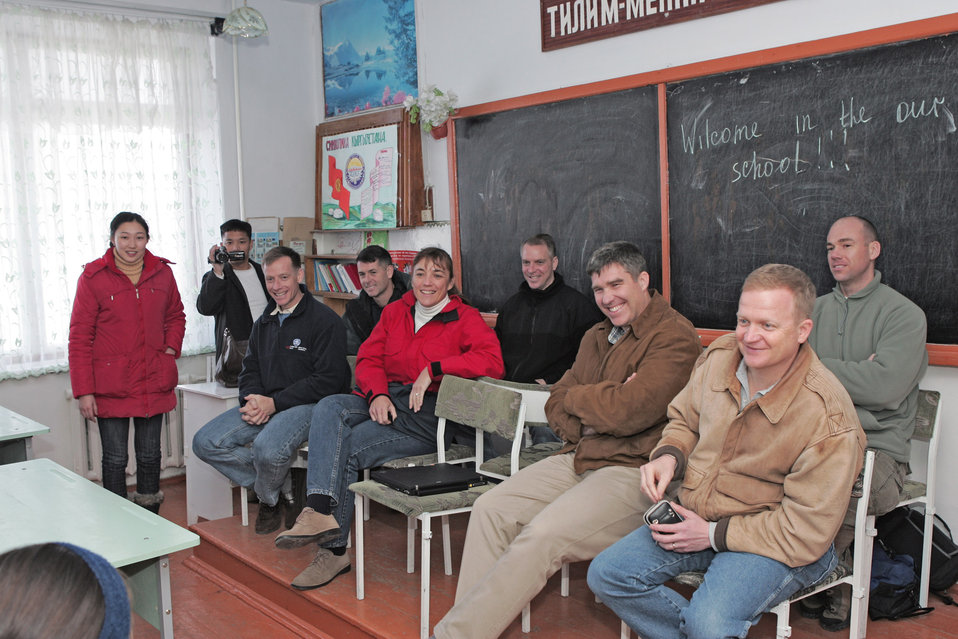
Shuttle Endeavour crew visits Kyrgyzstan village school

Astronauts from the Space Shuttle Endeavour STS-126 mission visit a Kyrgyzstan village school Jan. 29 near Manas Air Base, Kyrgyzstan. The six crewmembers of the space shuttle spoke of the journey, which launched from Kennedy Space Center in Florida Nov. 14 and returned Nov. 30, 2008.